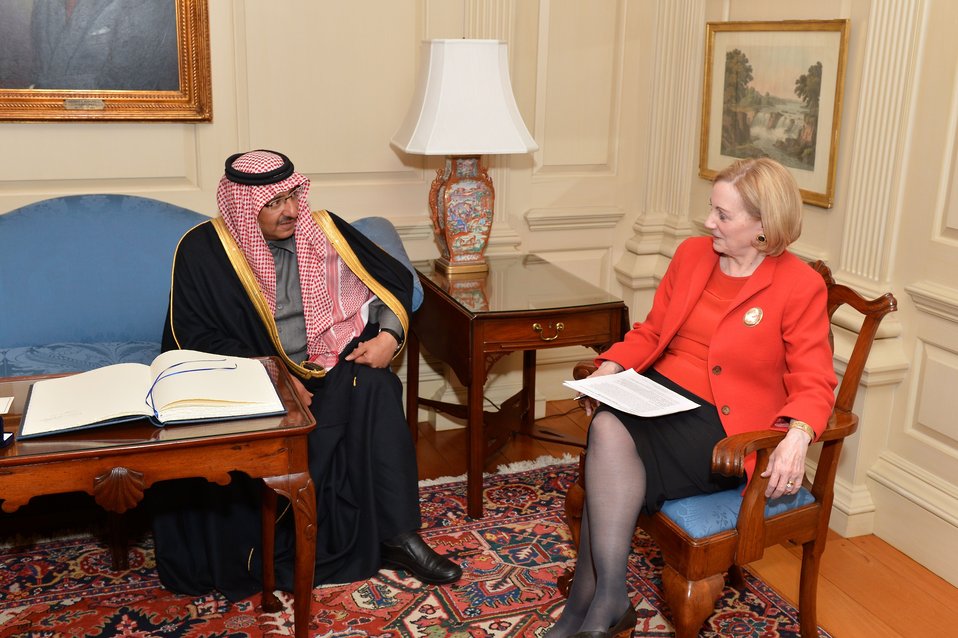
Assistant Secretary Patterson Meets With Saudi Interior Foreign Minister Mohammed bin Nayef

Assistant Secretary of State for Near Eastern Affairs Anne Patterson meets with Saudi Interior Foreign Minister Mohammed bin Nayef at the U.S. Department of State in Washington, D.C., on February 11, 2014.